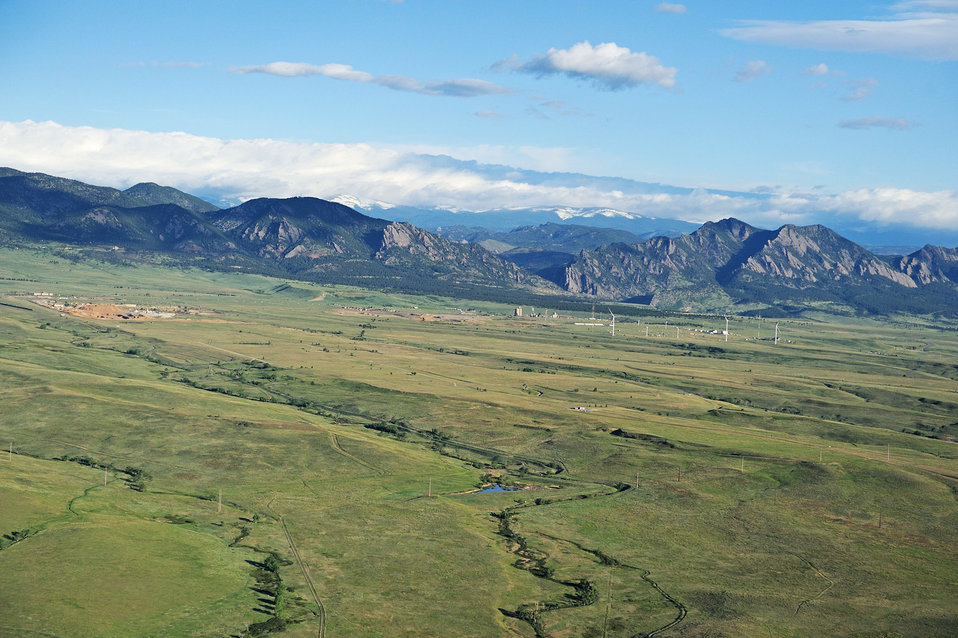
Rocky Flats - refuge looking NW

The closed Rocky Flats site can now be used as a wildlife refuge.